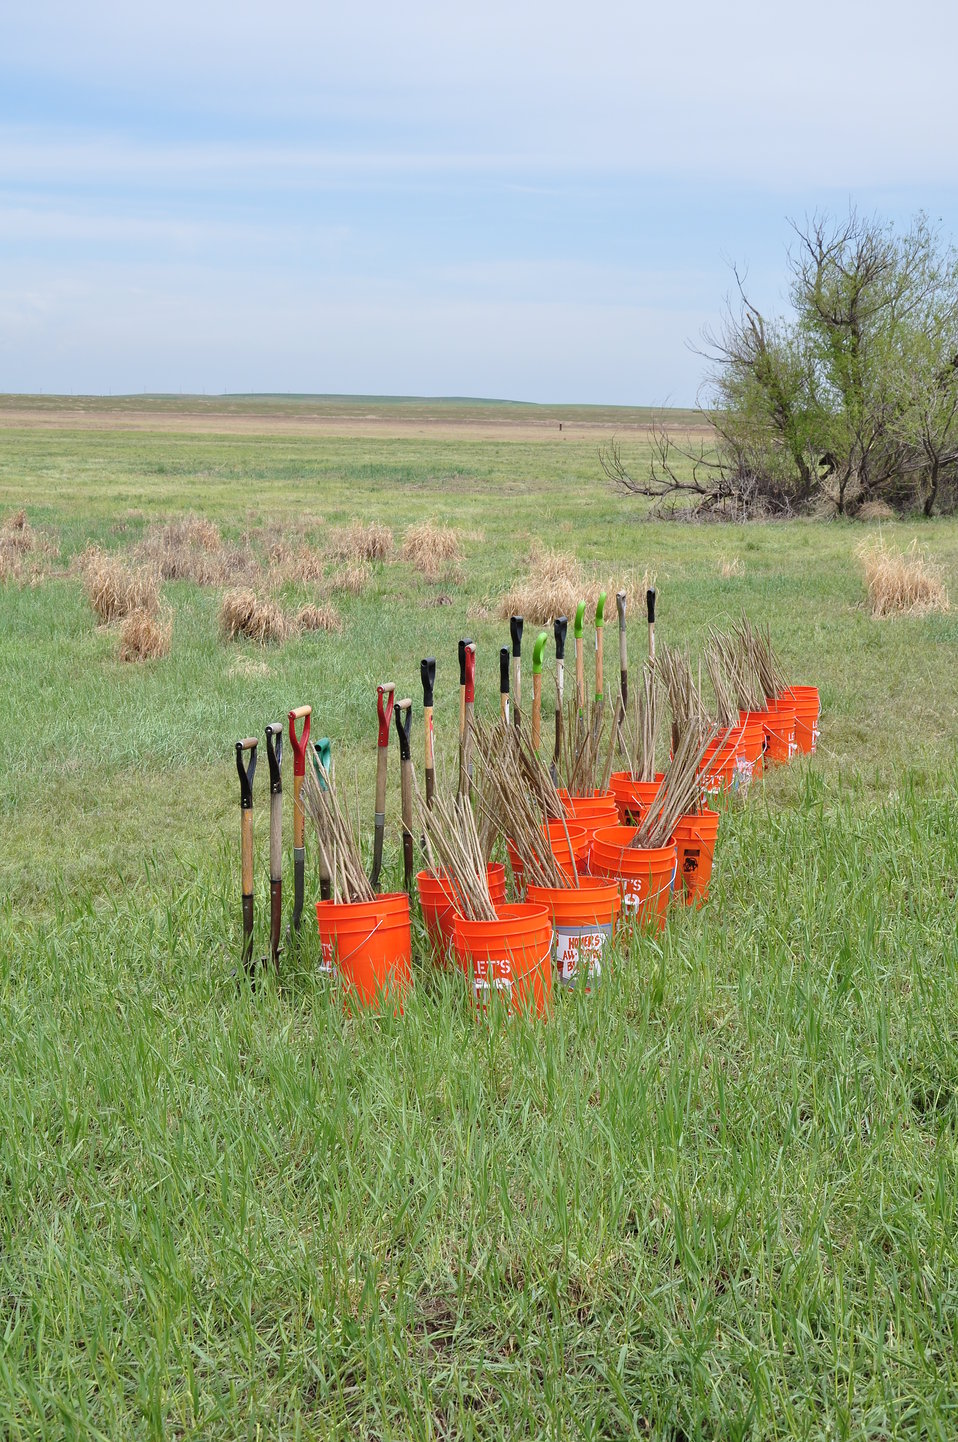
Secretary Jewell Assisted Groundwork Denver in Planting Cottonwood Trees